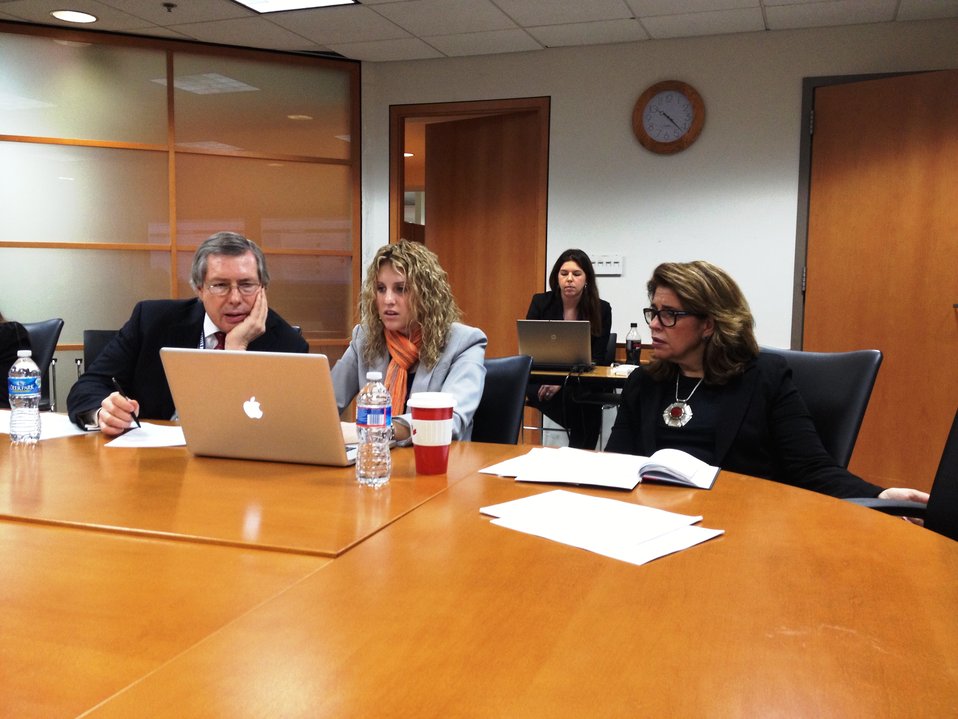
Ambassador Warlick Participates in a Twitter Q and A

Ambassador James Warlick, Deputy Special Representative for Afghanistan and Pakistan, participates in a Twitter Q and A on January 16, 2013.